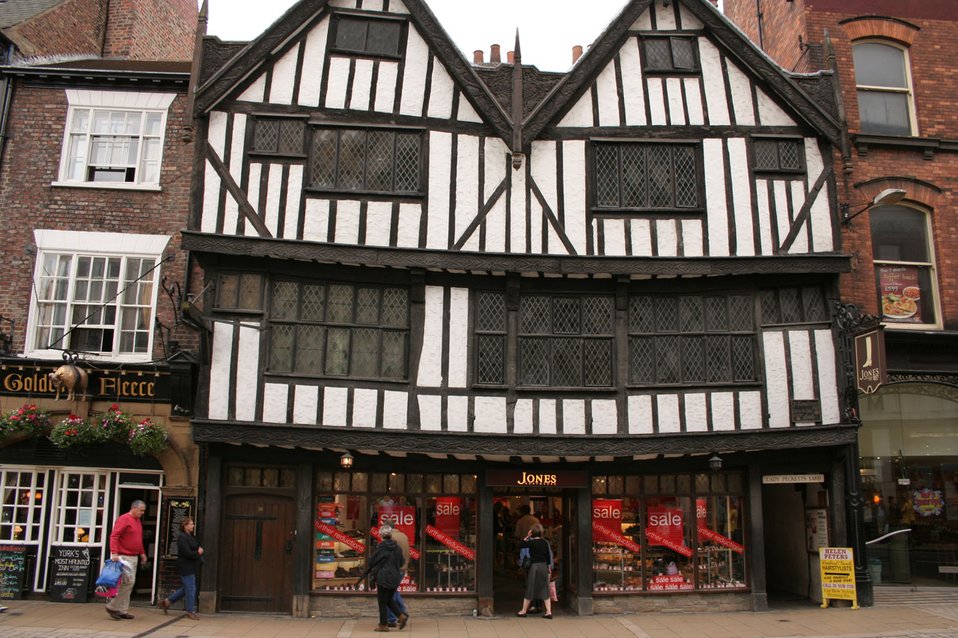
Old building

Old wooden building in york.